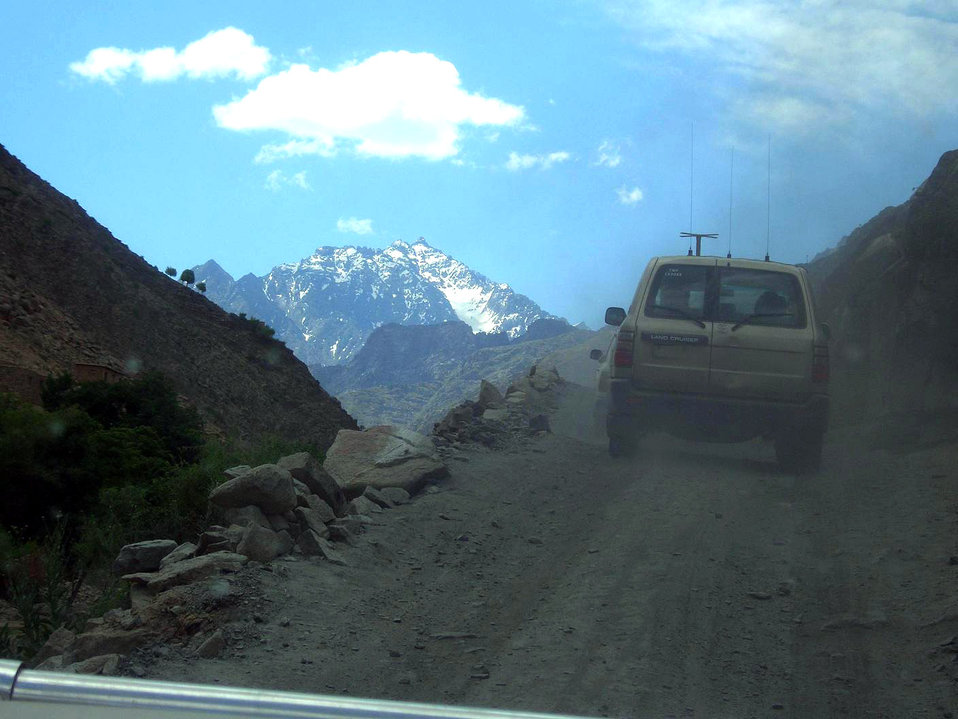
Multi-service team delivers goods to Afghan village

A multi-service supply convoy loaded with humanitarian assistance supplies makes its way up a narrow road in the Panjshir Province, Afghanistan, on Monday, June 12. The convoy delivered the supplies to the village of Dara, located at approximately 8,000 feet above sea level.